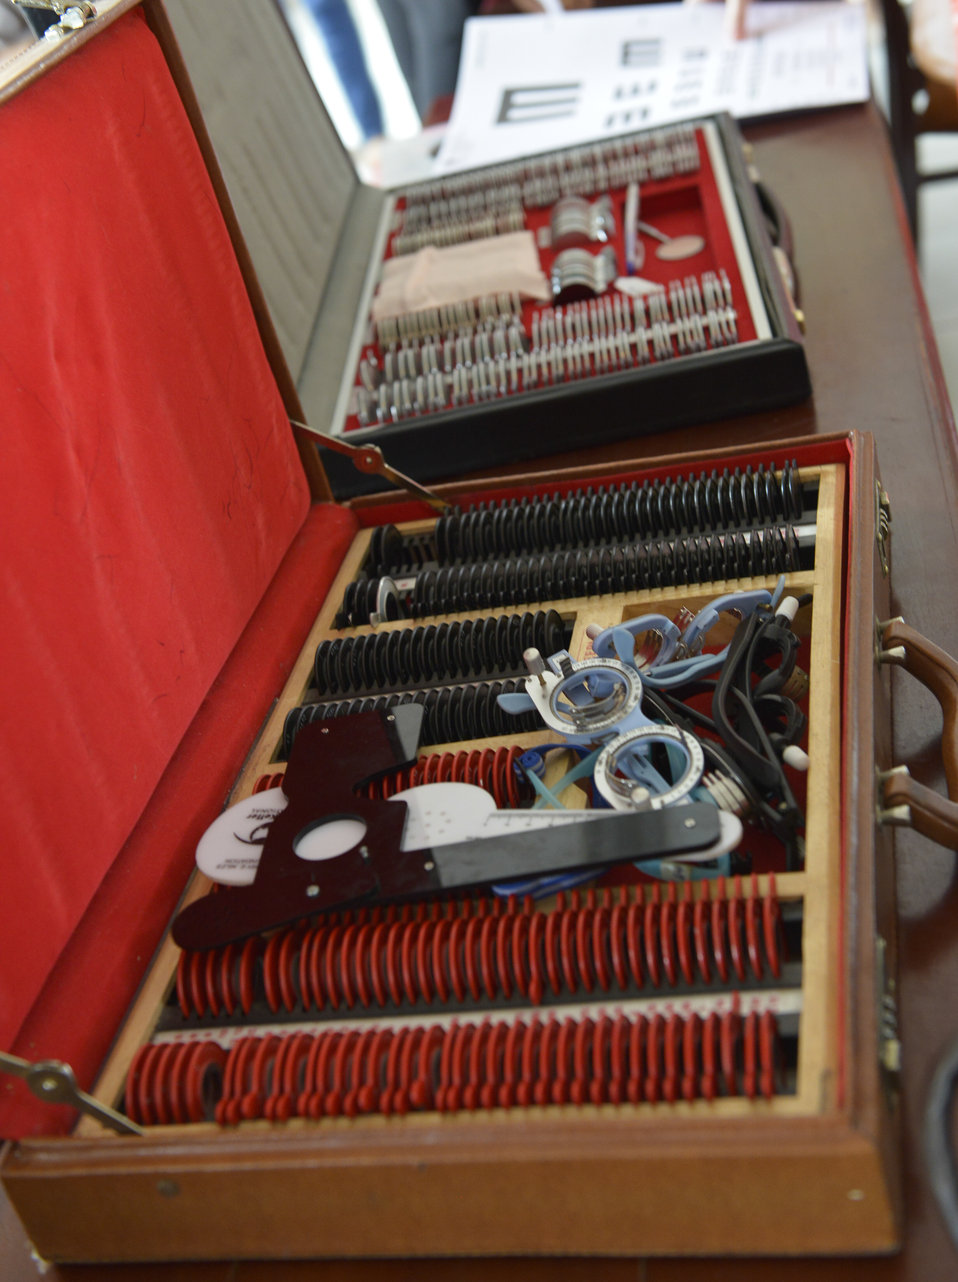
Eye screening for kindergarten children in Quoc Oai district of Hanoi

Quoc Oai, Hanoi. May 31, 2014.